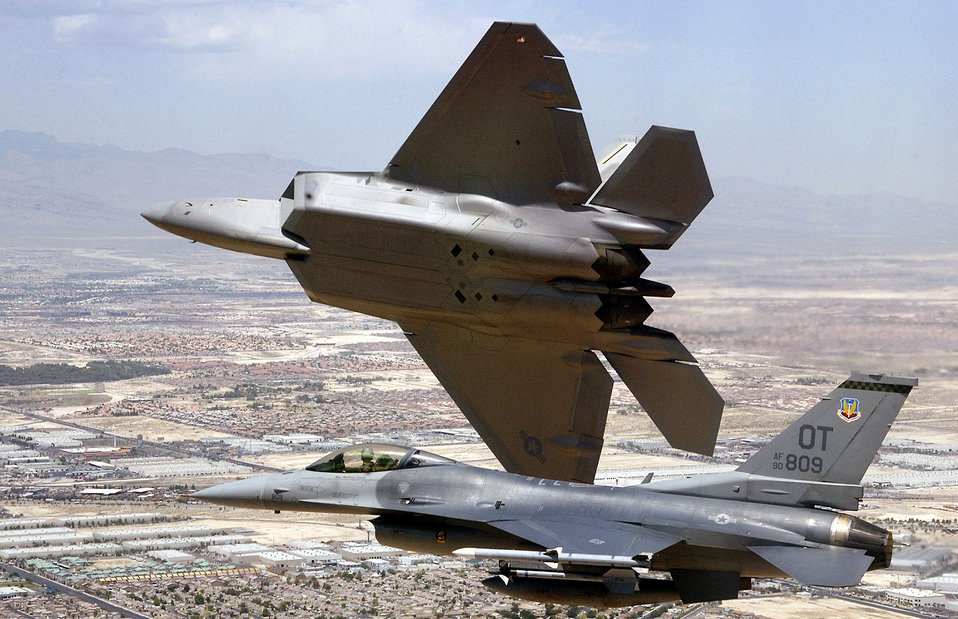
Breaking formation

NELLIS AIR FORCE BASE, Nev. -- An F/A-22 Raptor flown by Maj. David Thole breaks away after completing a training mission June 23 with an F-16 Fighting Falcon flown by Maj. Alex Grynkewich. Major Thole is assigned to the 422nd Test and Evaluation Squadron, and Major Grynkewich is from the 53rd Test and Evaluation Group.